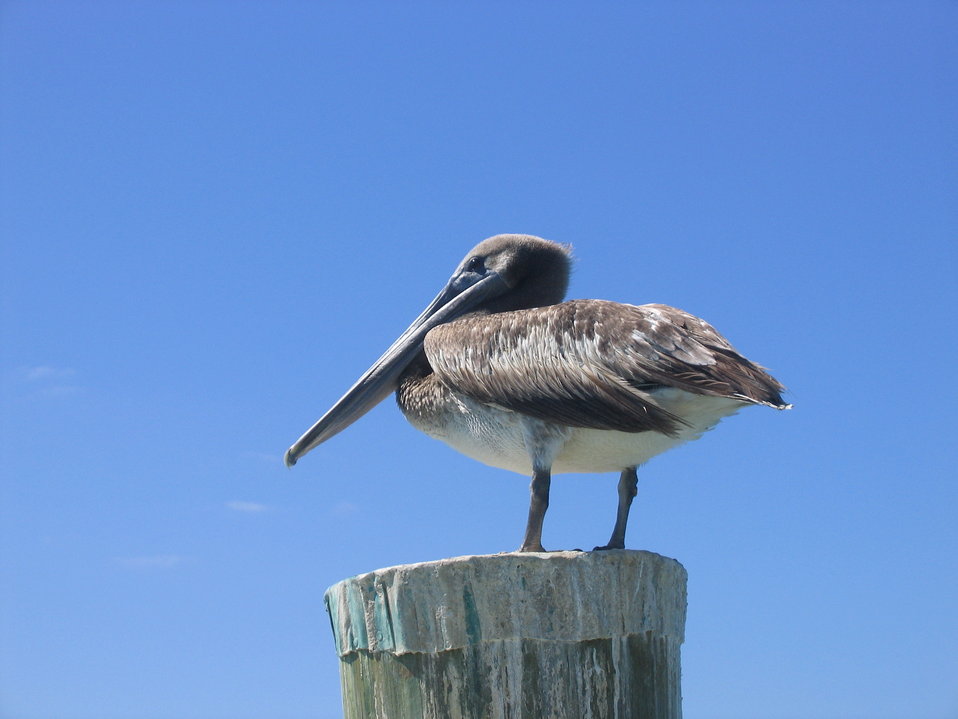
Pelican.